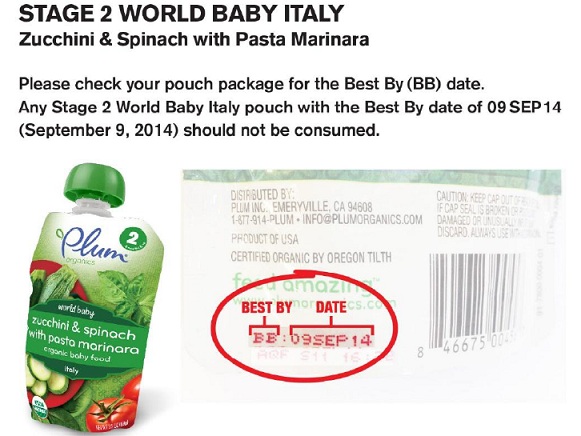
RECALLED – World Baby Italy and World Baby Thailand pouch products

March 4th, 2014 – Product Recall – Plum Organics Voluntarily Recalls Limited Quantity of Two Varieties of World Baby Pouch Products.